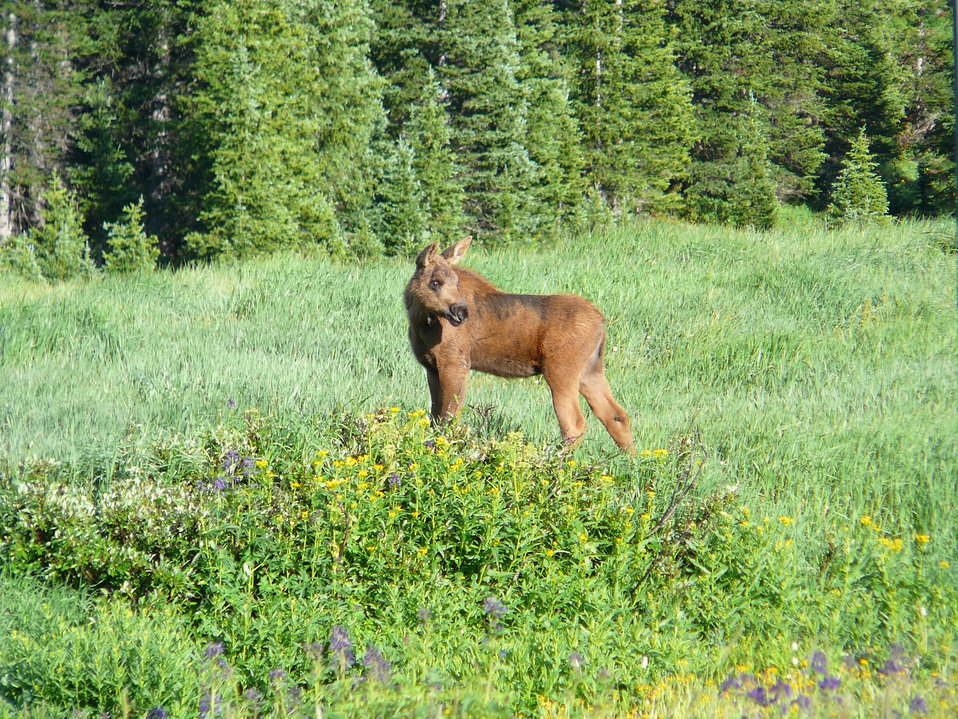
Colorado Summer

Moose calf outside Gould, Colorado.

Credit: Judson Spicer / USFWS

Photo Contest Entry #155